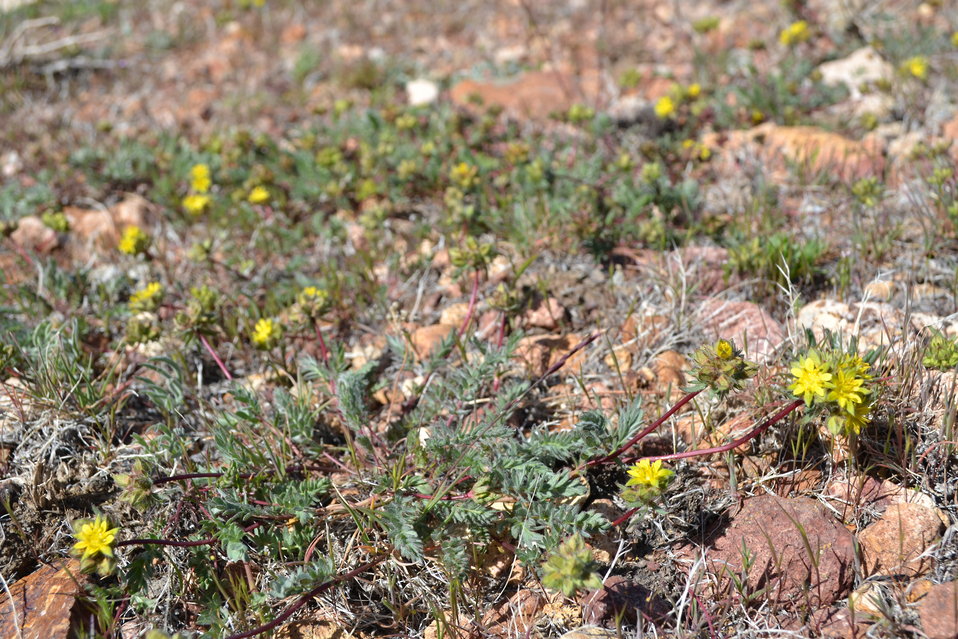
Webber Ivesia

Photo Credit: Sarah Kulpla/USFWS Webber ivesia (Ivesia webberi) is a member of the rose family. It is a low spreading, perennial forb approximately ten inches across with greenish-gray foliage and dark red, wiry stems. The leaves are mostly clustered around the base of the stems, with four to eight pairs of leaflets crowded at the tip, and generally covered with long, silky grayish hairs. Flowering typically begins in May and extends through June. The small bright yellow flowers occur in groups. The whole plant becomes reddish-tinged late in the season. This plant occurs in Washoe and Douglas Counties in Nevada and in Lassen, Plumas, and Sierra Counties in California.